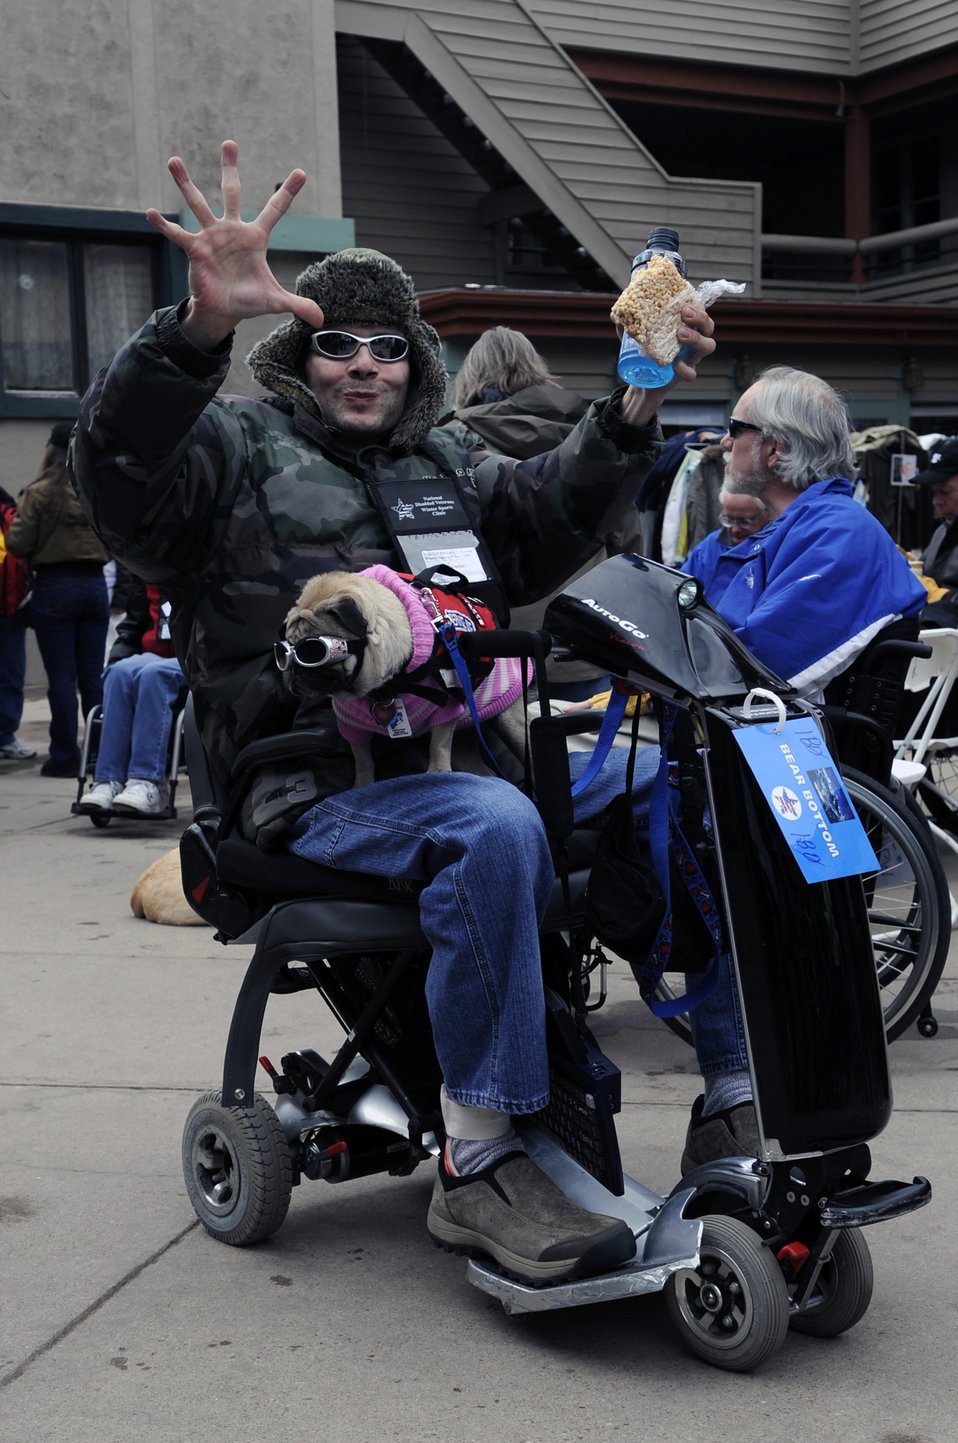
Winter rehabilitation clinic shows veterans potential